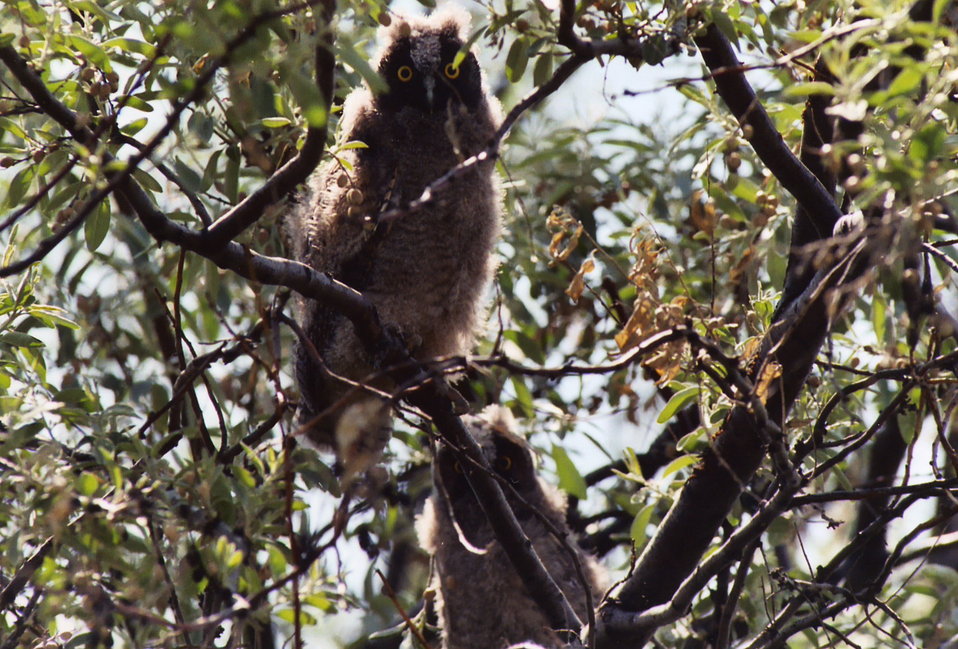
Long-eared Owl Chicks, Bowdoin NWR

Long-eared owl chicks at Bowdoin NWR.